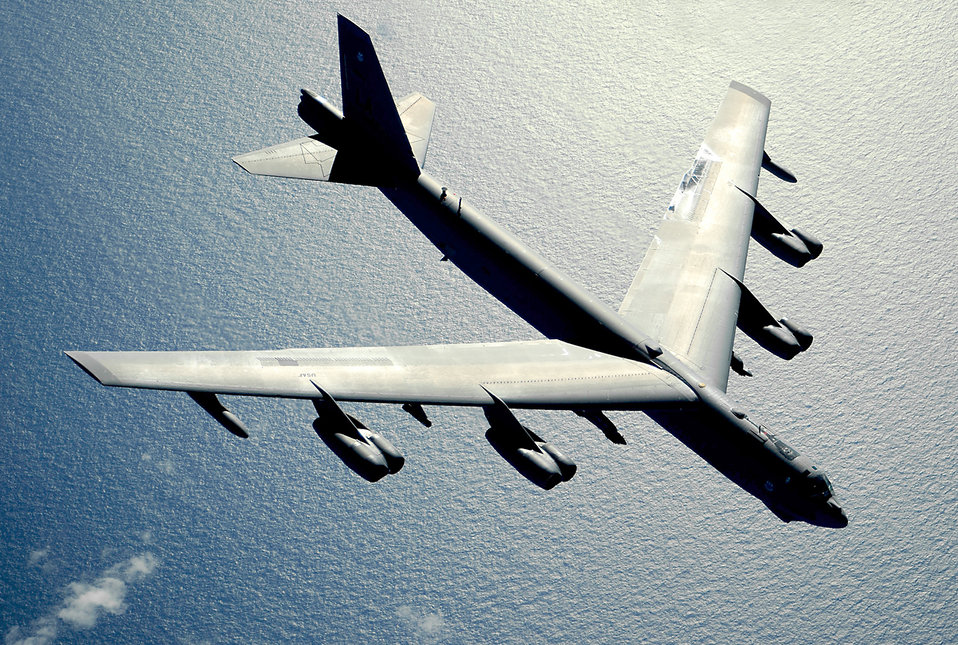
U.S.-Russia nuclear arms treaty

The U.S. Senate ratified the new Strategic Arms Reduction Treaty Dec. 22, 2010, with the intent of leveling the nuclear arms playing field between the U.S. and Russia. The treaty allows U.S. and Russian officials to conduct as many as 10